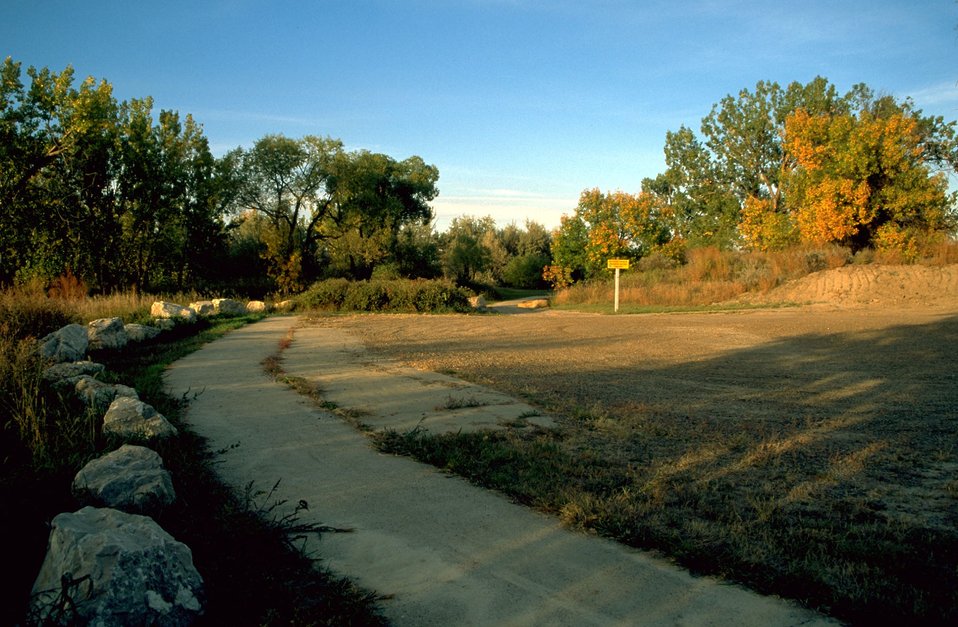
Upper pariking area at Matthews Recreation Site